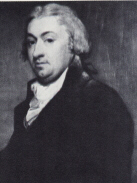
Robert R. Livingston, U.S. Secretary of Foreign Affairs, October 20, 1781 to June 1783